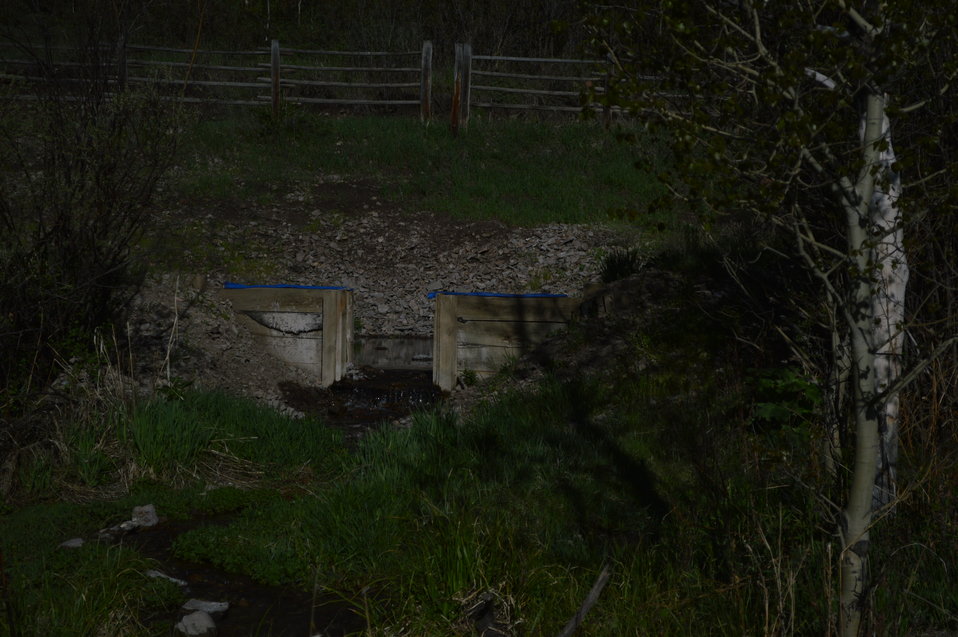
Regional Leadership Visit to Montana 2014